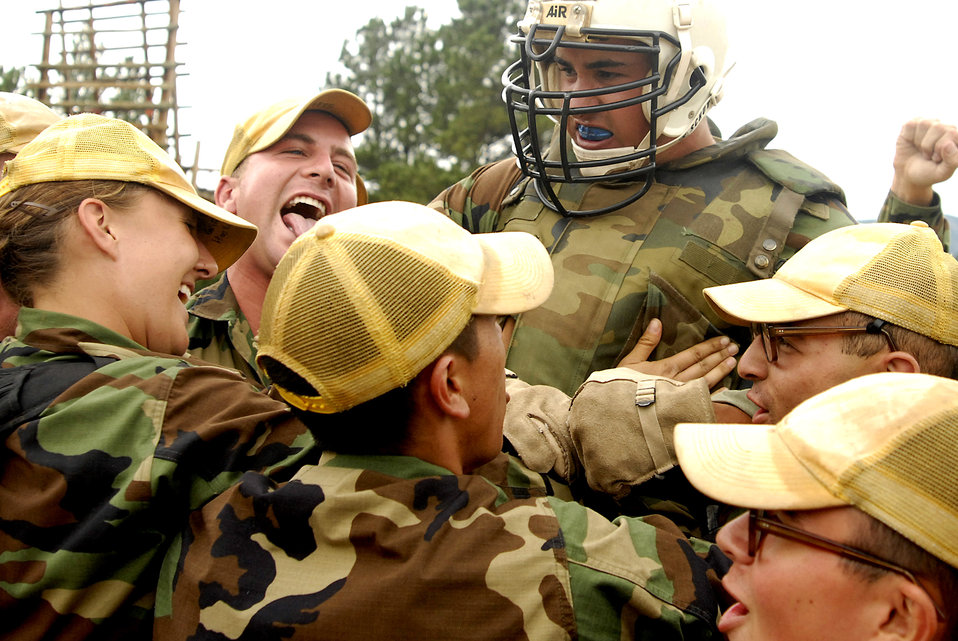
Academy cadets vie to become 'Big Bad Basic'

Academy basic cadet trainee Griffin Biscone is mobbed by members of his squadron July 28 at the U.S. Air Force Academy, Colo., after winning the title of